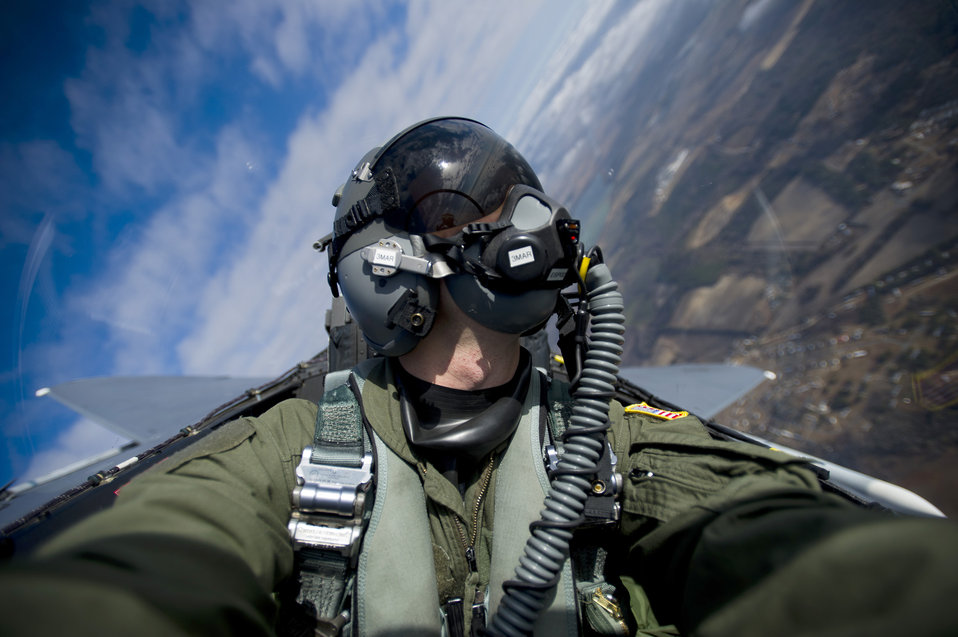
F-15s training mission

Staff Sgt. Michael Keller takes a self portrait during an F-15E Strike Eagle training mission Dec. 17, 2010, over North Carolina. Sergeant Keller is an aerial combat photographer from the 1st Combat Camera Squadron at Charleston AFB, S.C.